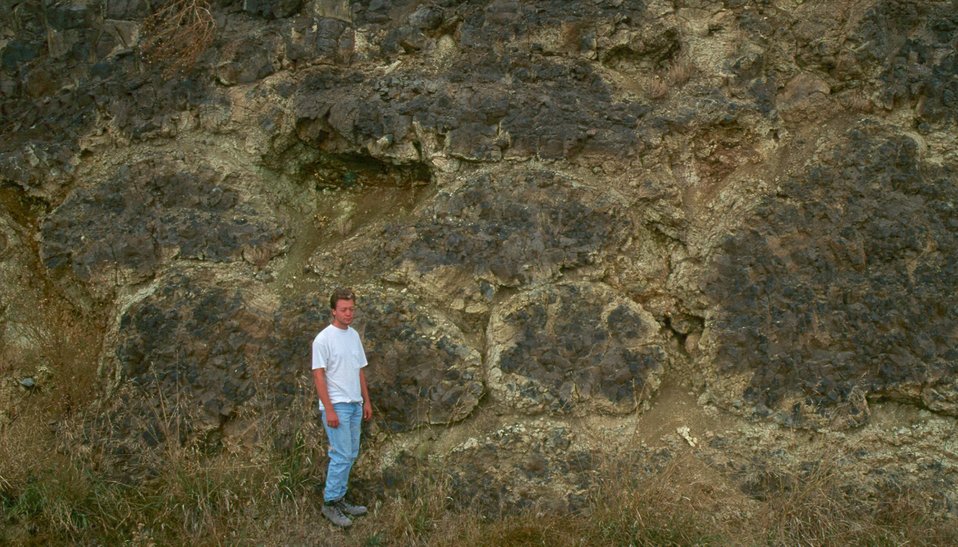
Grangeville Pillow Basalt Cottonwood Field Office UCSC Upper Columbia Salmon Clearwater District